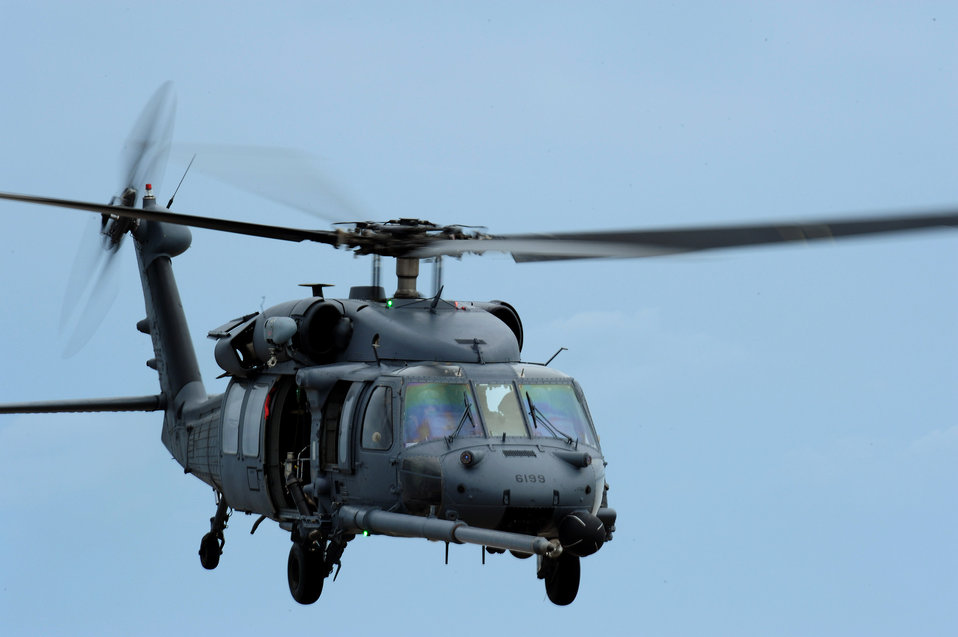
Airmen conduct search, rescue

An HH-60 Pave Hawk assigned to the 331st Air Expeditionary Group conducts search and rescue operations after Hurricane Ike, in Galveston, Texas, Sept. 13.